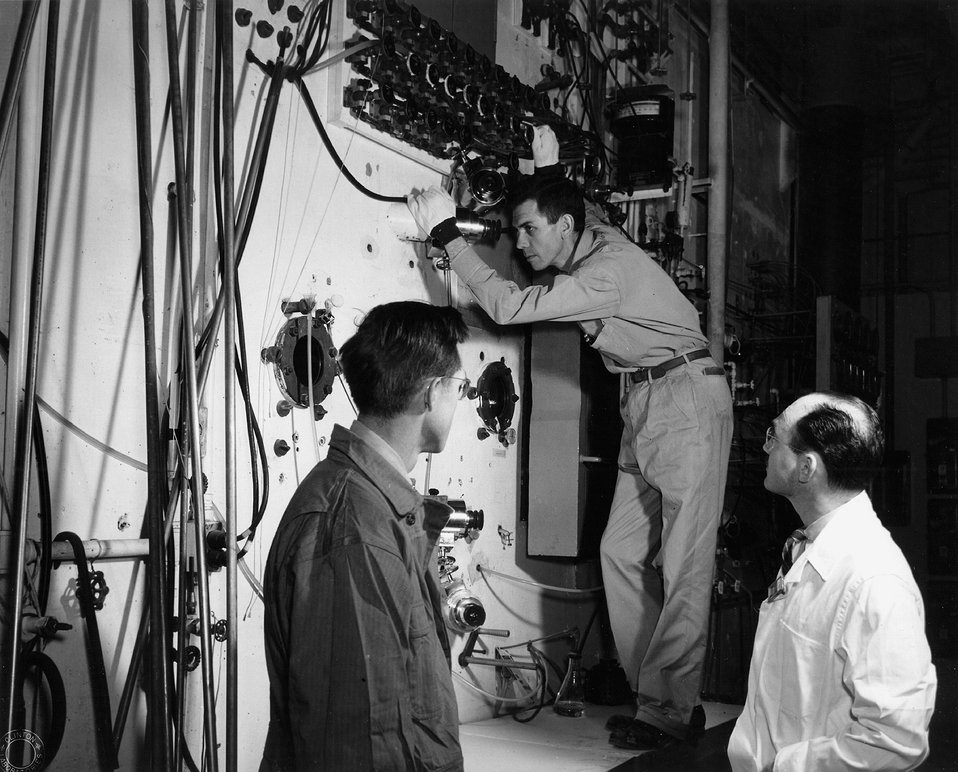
Clinton Lab - Oak Ridge Operations Office. c. undated